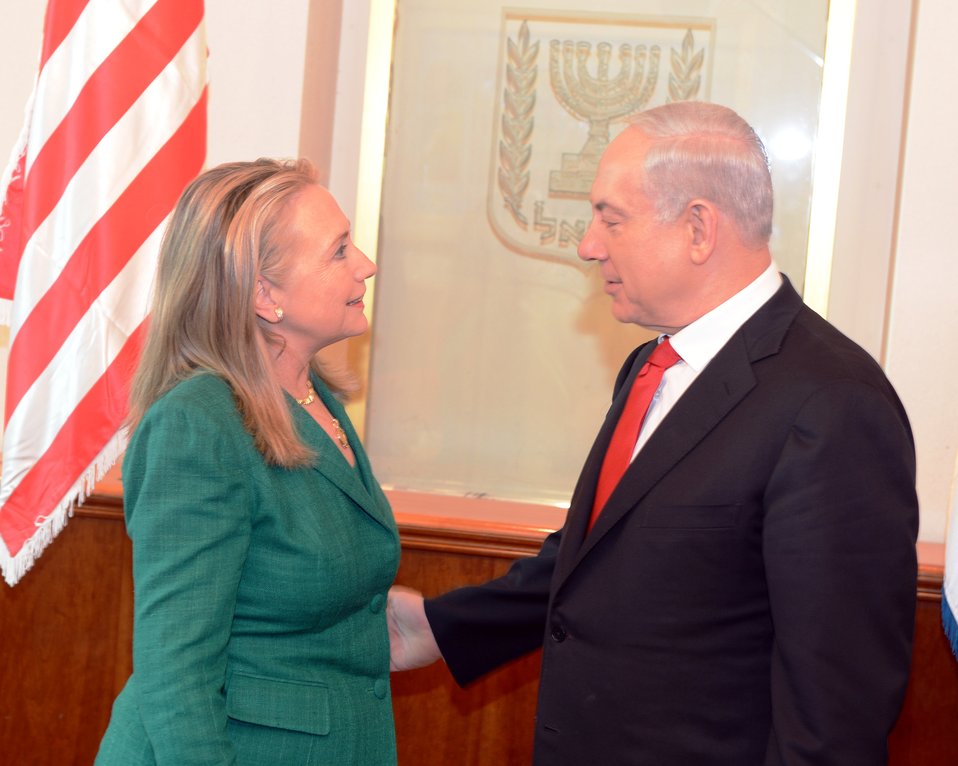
Secretary Clinton Meets With Israeli Prime Minister Netanyahu

U.S. Secretary of State Hillary Rodham Clinton meets with Israeli Prime Minister Benjamin Netanyahu in Jerusalem, November 21, 2012.